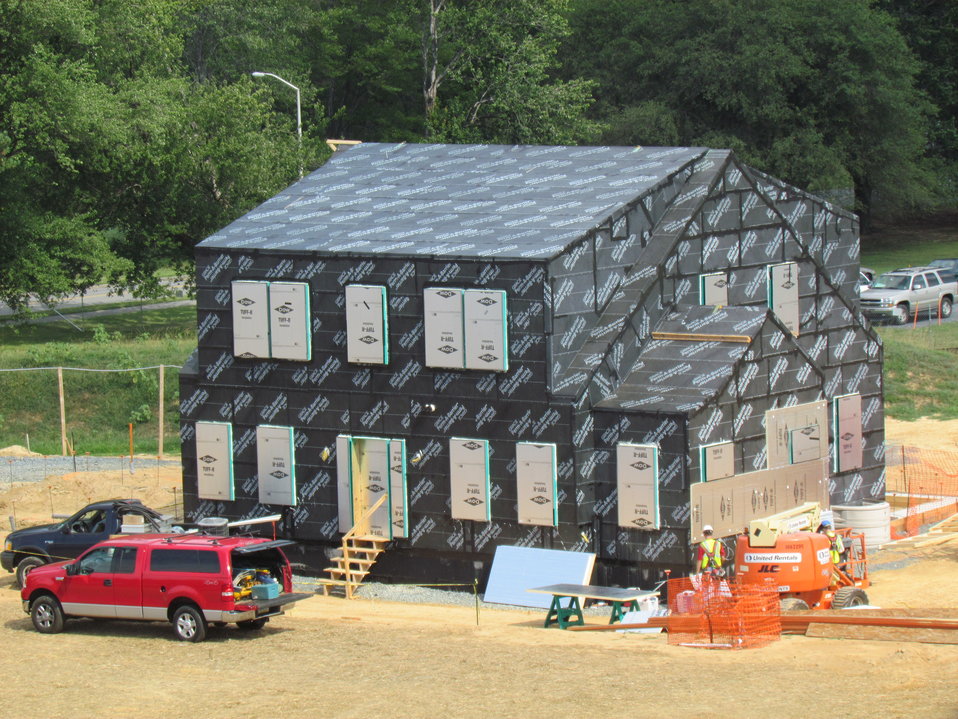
Net-Zero Energy Residential Test Facility - The exterior shell of house is complete and wrapped in a air/moisture barrier. Window and door openings have been sealed in preparation of first air leakage test.